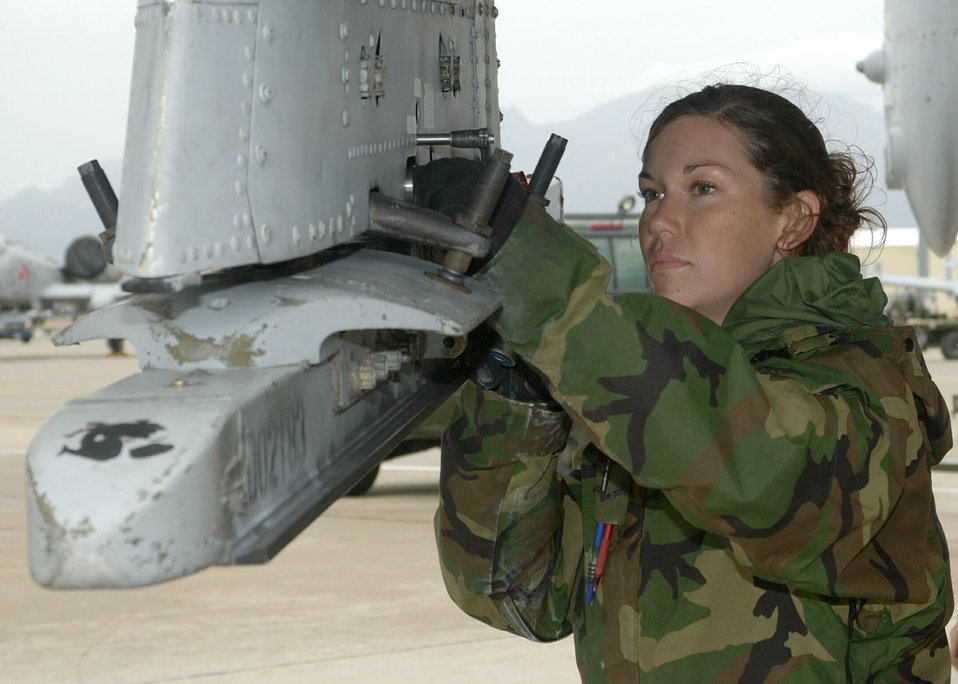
Attention to detail

DAVIS-MONTHAN AIR FORCE BASE, Ariz. -- Airman 1st Class Erin Rodriguez works on the bomb rack of an A-10 Thunderbolt II during an exercise here recently. Airman Rodriguez is with the 355 Aircraft Maintenance Squadron.